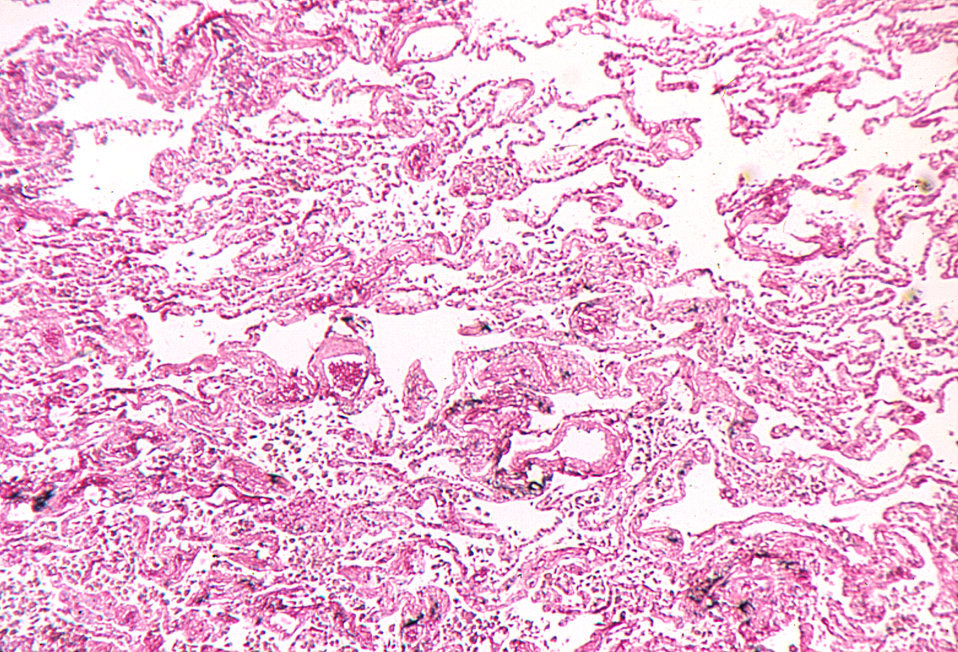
Fatal inhalation anthrax, lung.